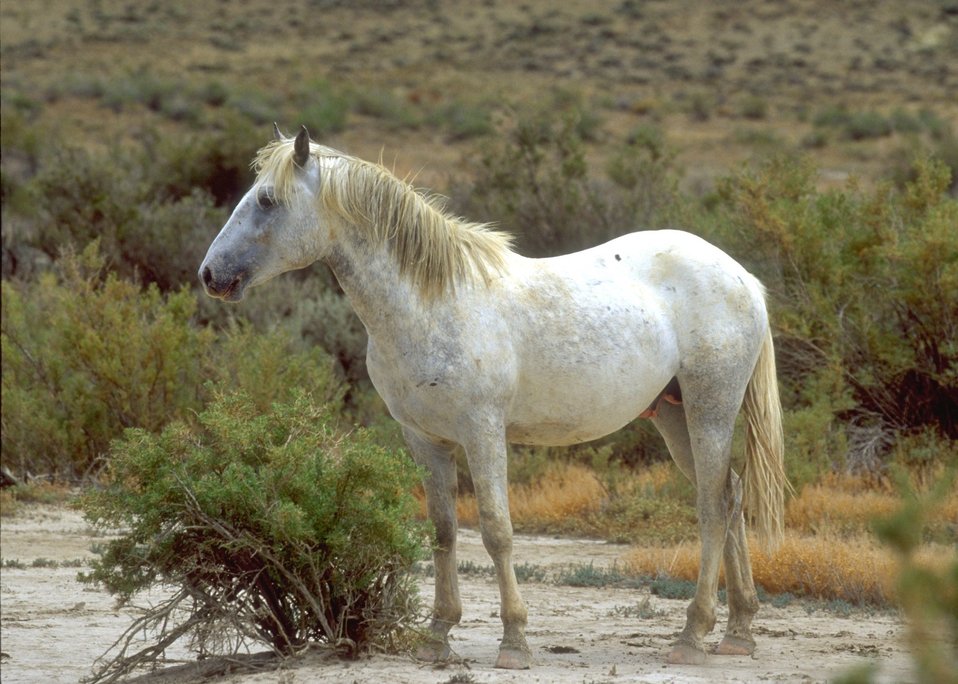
Wild horses, Rock Springs Field Office.